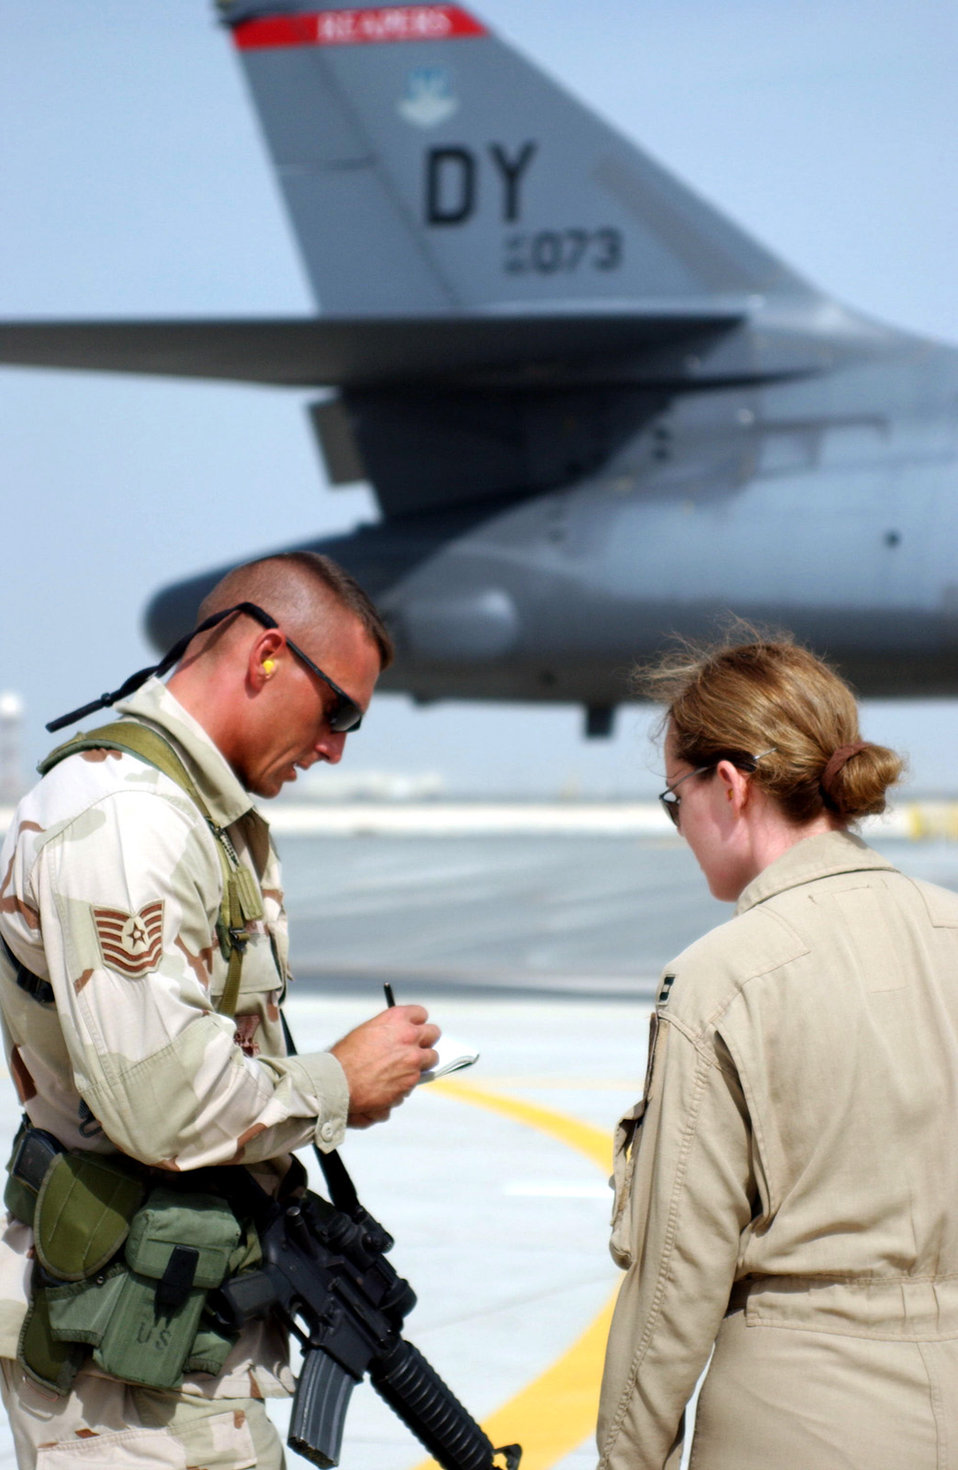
Dubai Air Show

DUBAI, United Arab Emirates (AFPN) -- Capt. Briana Detlefsen (right) coordinates with Tech. Sgt. Guy Dashnea on parking and entry-control-point procedures at the Dubai International Air Show. Captain Detlefsen is a B-1B Lancer pilot from Dyess Air Force Base, Texas. Sergeant Dashnea is a security forces Airman here from a deployed location in Southwest Asia. The air show is Nov. 20 to 24.